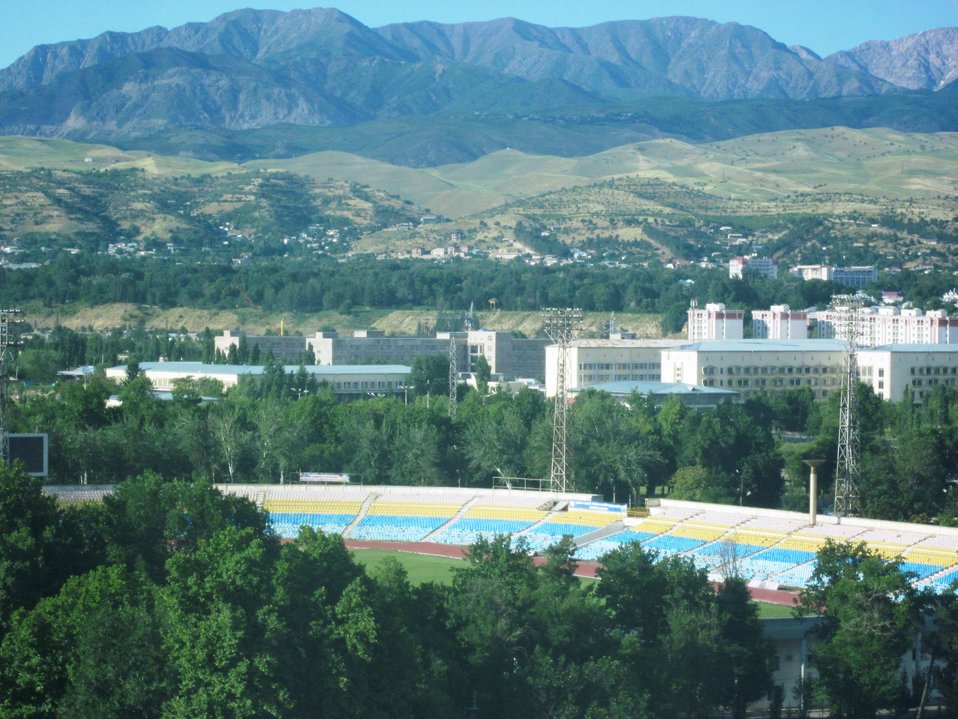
A Photo is Take of the Dushanbe Landscape

A photo is taken of the landscape from the Dushanbe Hyatt Hotel in Dushanbe, Tajikistan, on June 6, 2010.